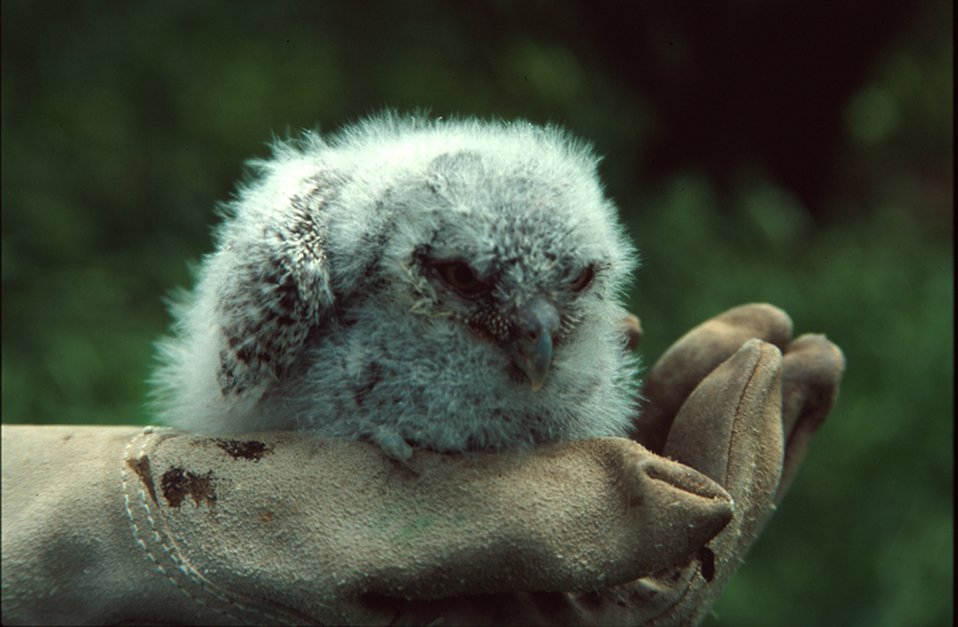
Western Screech Owl chick Owyhee Field Office LSRD Lower Snake River District